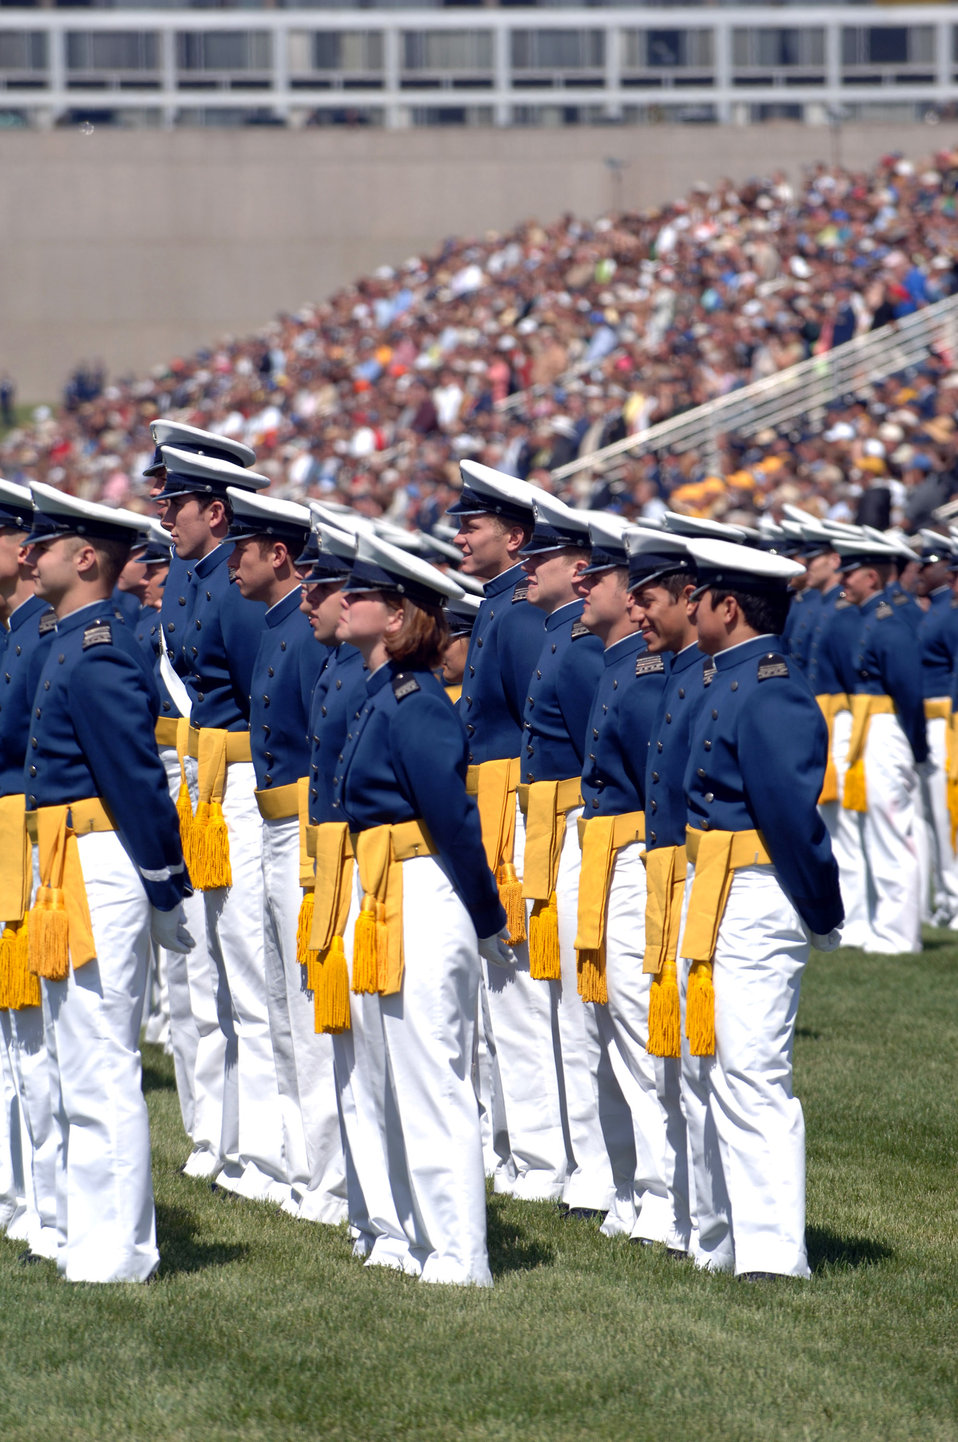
Parade preps Class of 2007 for graduation

Senior cadets march during the 2007 Graduation Parade May 29 at the U.S. Air Force Academy in Colorado. The graduation for the U.S. Air Force Academy's Class of 2007 will be held at 10 a.m. May 30 at Falcon Stadium. Secretary of Defense Dr. Robert M. Gates will be the guest speaker. Special needs of future Air Force officers are met by professionally oriented courses, including human physiology, computer science, economics, military history, astronautics, law and political science.